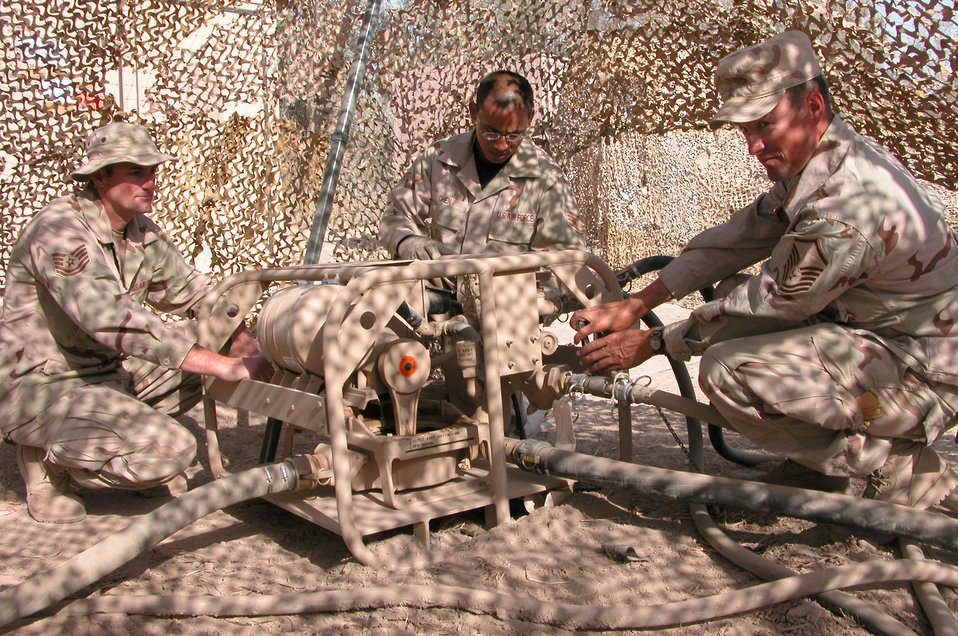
Let there be water

OPERATION IRAQI FREEDOM (AFPN) -- (From left) Staff Sgt. Stephen Chen, Tech. Sgt. Richard Norman and Master Sgt. Adams work on maintaining pumps that control water shower tents at Baghdad International Airport. The airmen are deployed from the 355th Civil Engineer Squadron at Davis-Monthan Air Force Base, Ariz. CE teams have erected more than 132 tents and multiple shower and shave units at the airport.